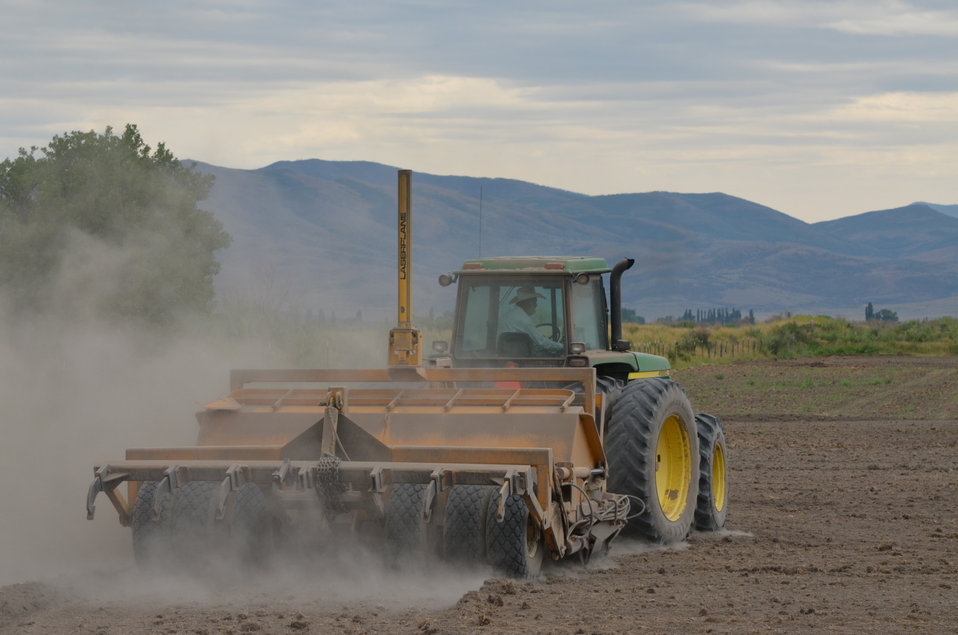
Strike Force Ranch 1

One of Reggie Premo’s alfalfa fields being laser leveled, which allows for a more even and efficient distribution of water across a field.